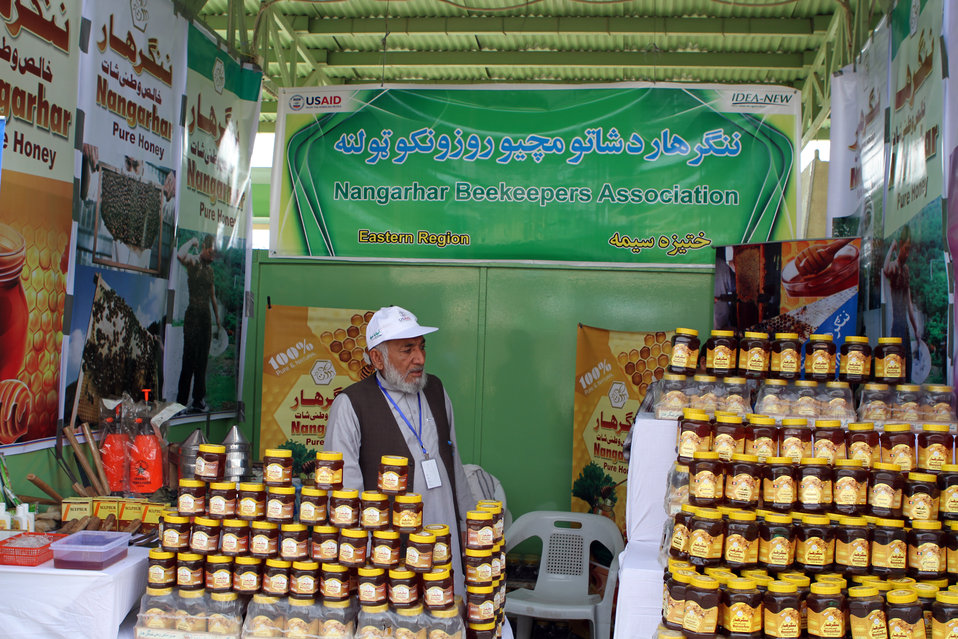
Agfair event